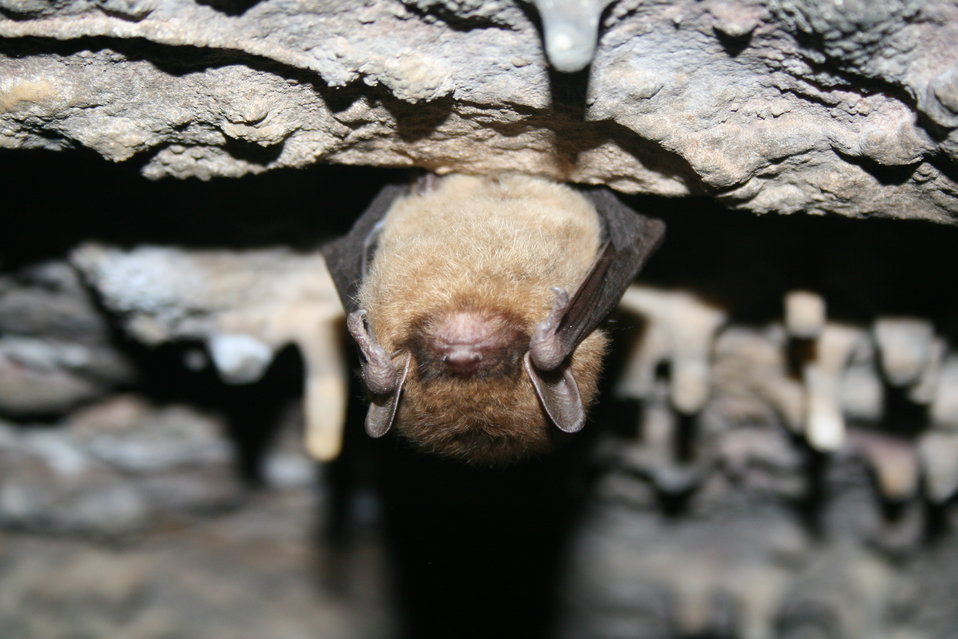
Little brown bat